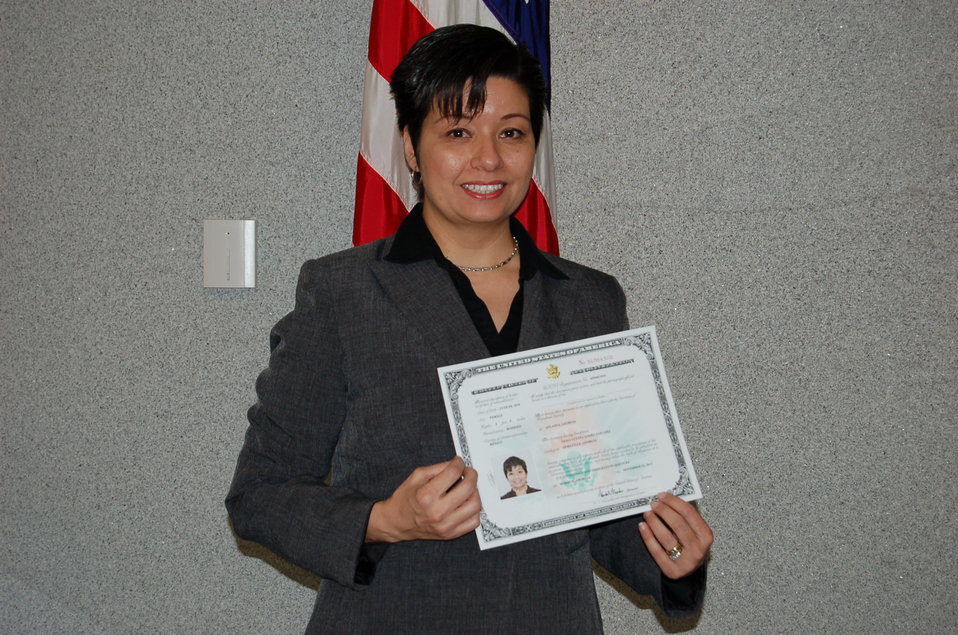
New Citizens